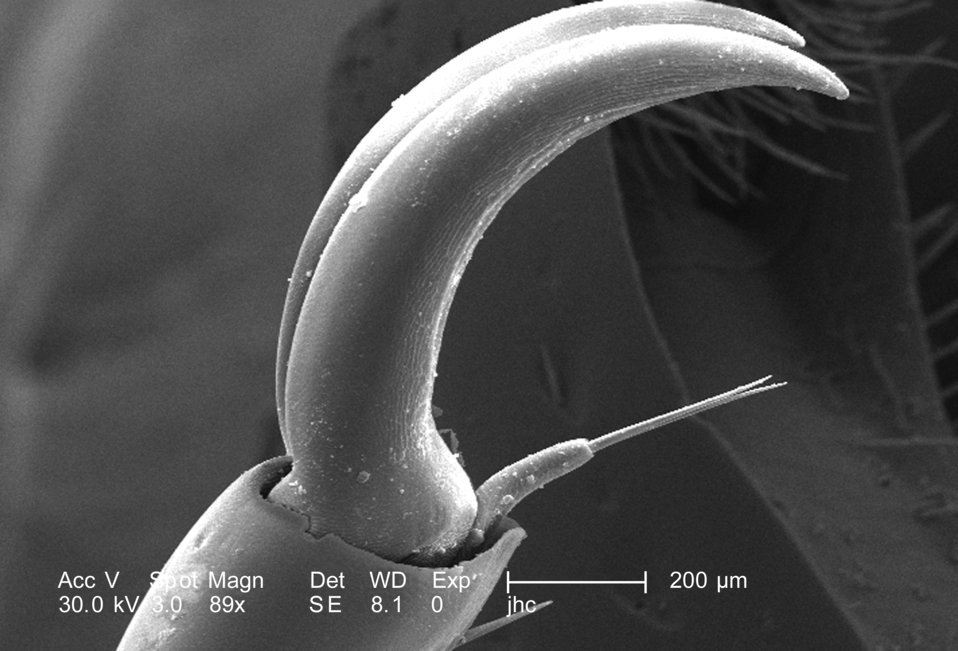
Still at a low magnification of 89X, which is twice as high as PHIL 9943, this scanning electron micrograph (SEM) again depicted some of the morphologic exoskeletal features located at the distal end of an adult 'figeater' beetle's, Cotinis mutabilis leg. Depicted here was the claw-like tip of the insect's 5th tarsomere, as well as its accompanying empodium. This appendicular configuration affords the beetle a secure grasp of objects within its environmental domain, such as foliage or food. See PHIL 9943, 9945, 9947, 9948, and 9949 for additional views of these exoskeletal features.